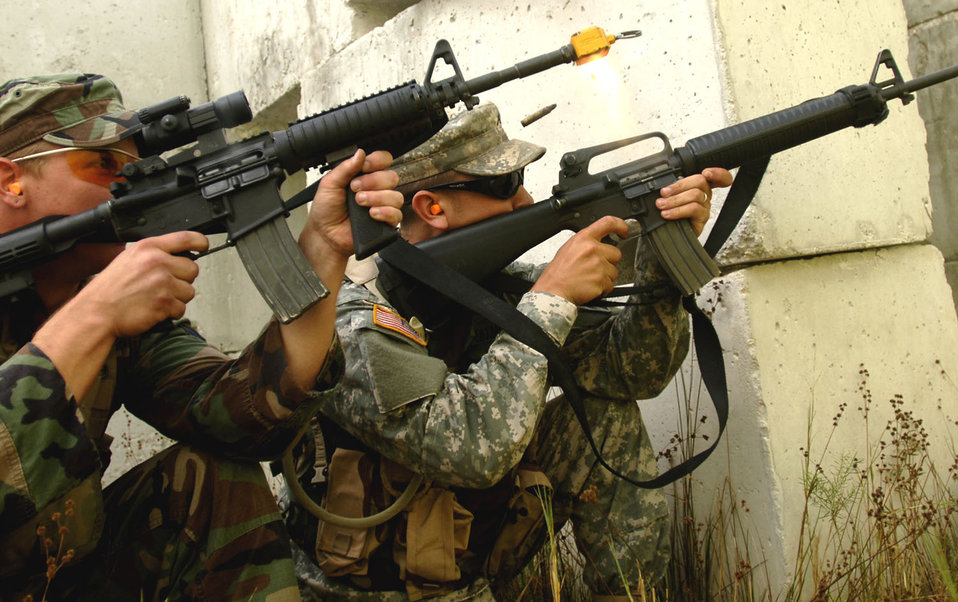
Atlantic Strike provides joint training for interdependent warfighters

Senior Airman Justin Priniski and Pvt. Brian Eatmon return fire against simulated insurgents duirng Atlantic Strike IV at Avon Park, Fla., Oct. 23. Atlantic Strike is a U.S. Central Command Air Forces initiative dedicated to supporting the war on terrorism. It includes more than 700 joint participants in seven days of training operations.